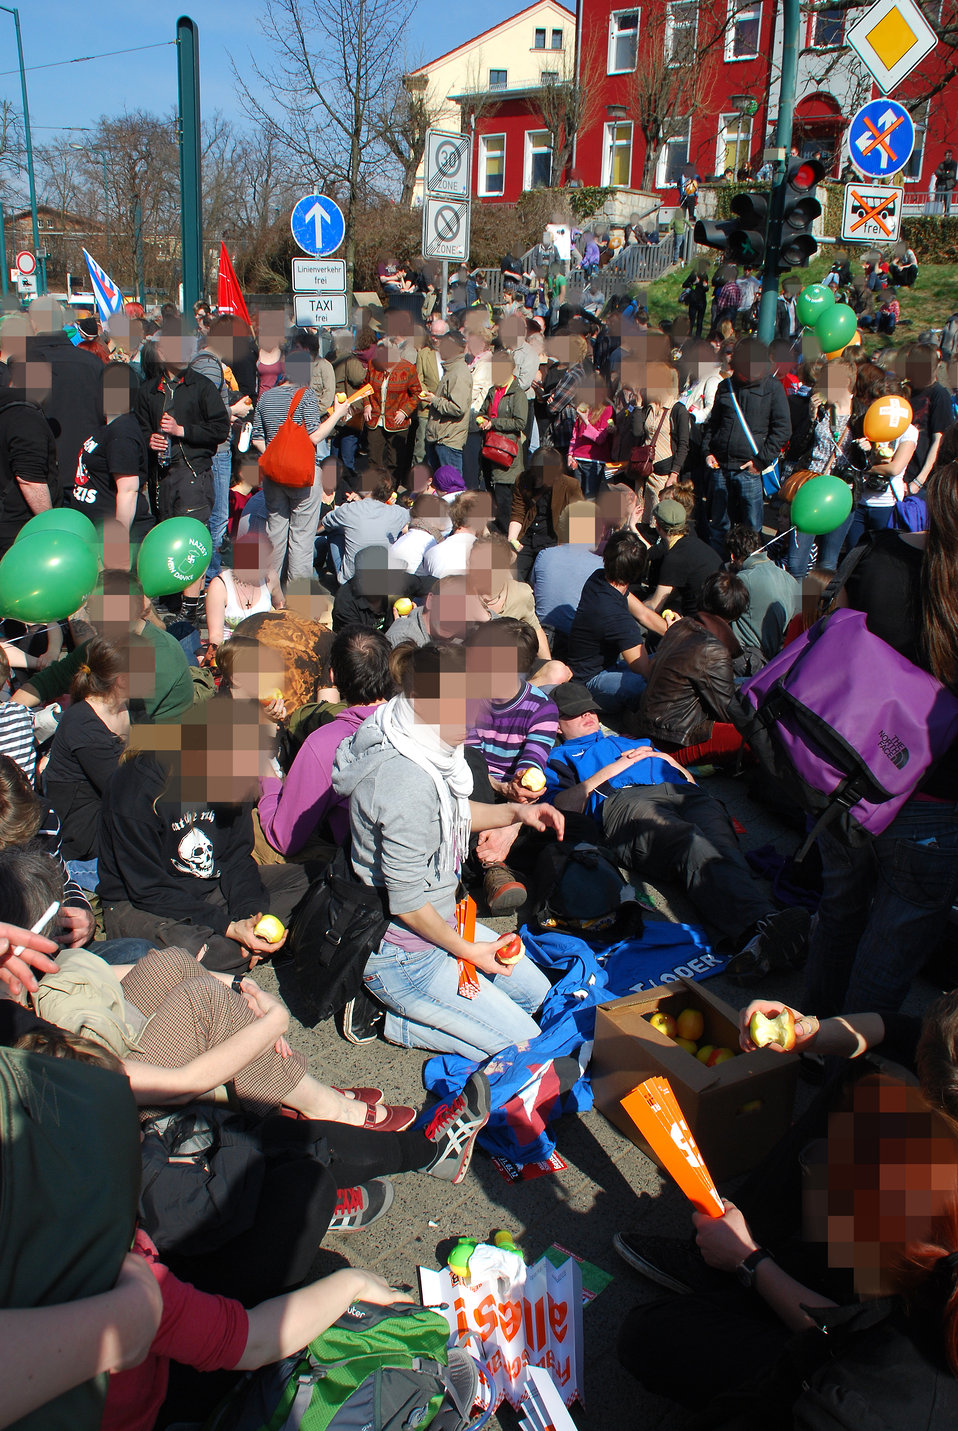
Proteste gegen den Nazi-Aufmarsch am 24.3.2012 in Frankfurt (Oder)